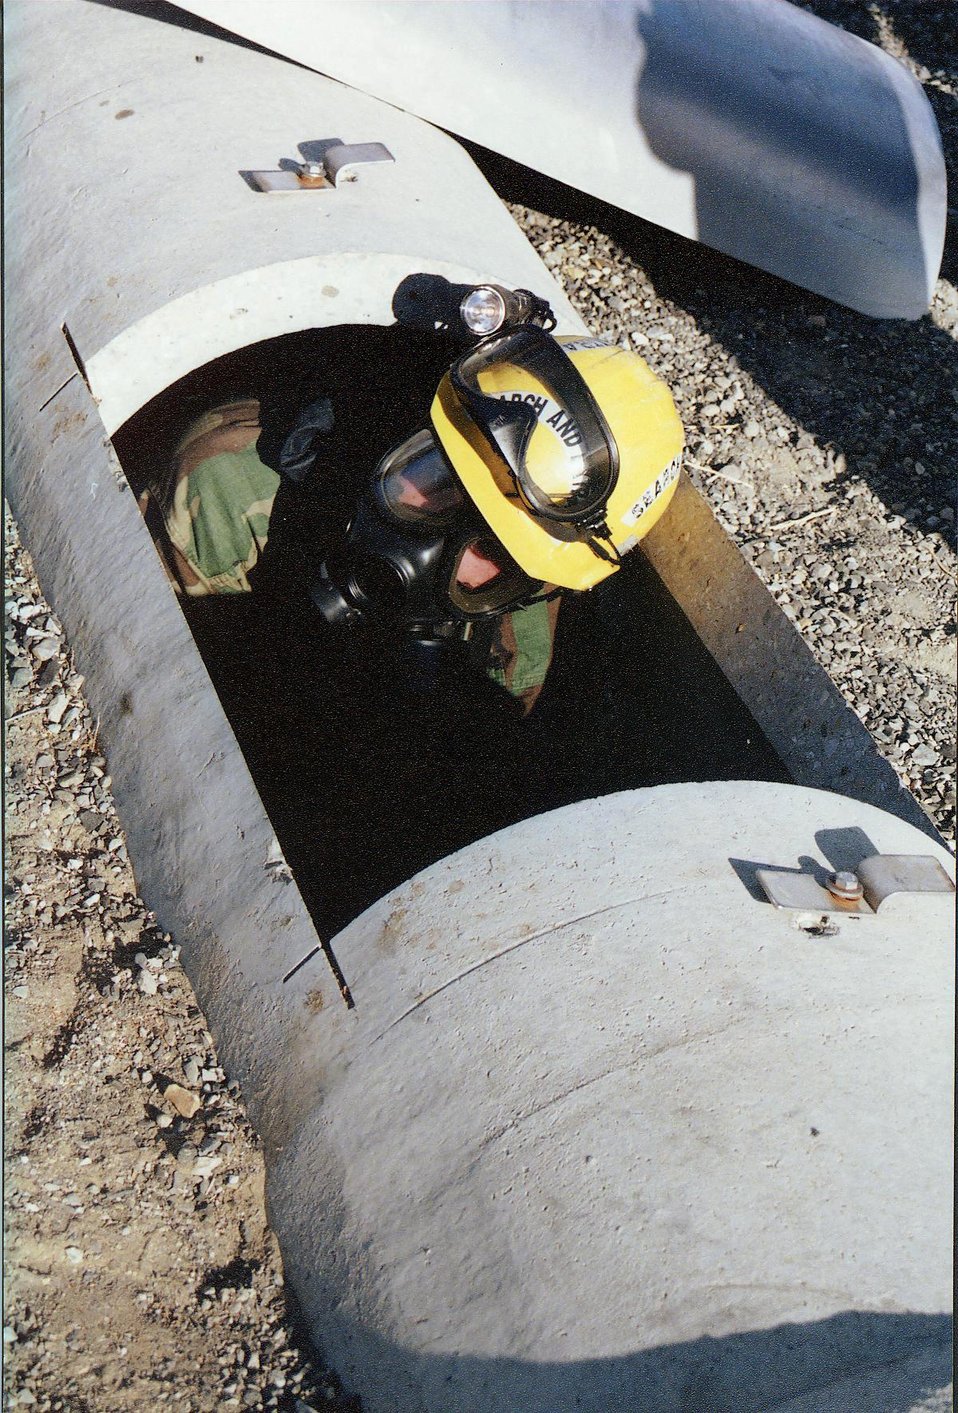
U.S. MARINE CORPS CHEMICAL BIOLOGICAL INCIDENCE RESPONSE FORCE PERSONNEL PRACTICE CONFINED SPACE RESCUE.

THE HAZARDOUS MATERIALS MANAGEMENT AND EMERGENCY RESPONSE CENTER (HAMMER), IS A TRAINING FACILITY LOCATED IN RICHLAND, WASHINGTON. HAMMER AREAS OF EXPERTISE INCLUDE EMERGENCY OPERATIONS, ENVIRONMENTAL AND WASTE MANAGEMENT AND RECOVERY, FIRE OPERATIONS, LAW ENFORCEMENT, NUCLEAR SAFETY, OCCUPATIONAL SAFETY AND HEALTH AND TRANSPORTATION. HAMMER PLAYS AN IMPORTANT ROLE IN HOMELAND SECURITY TRAINING.